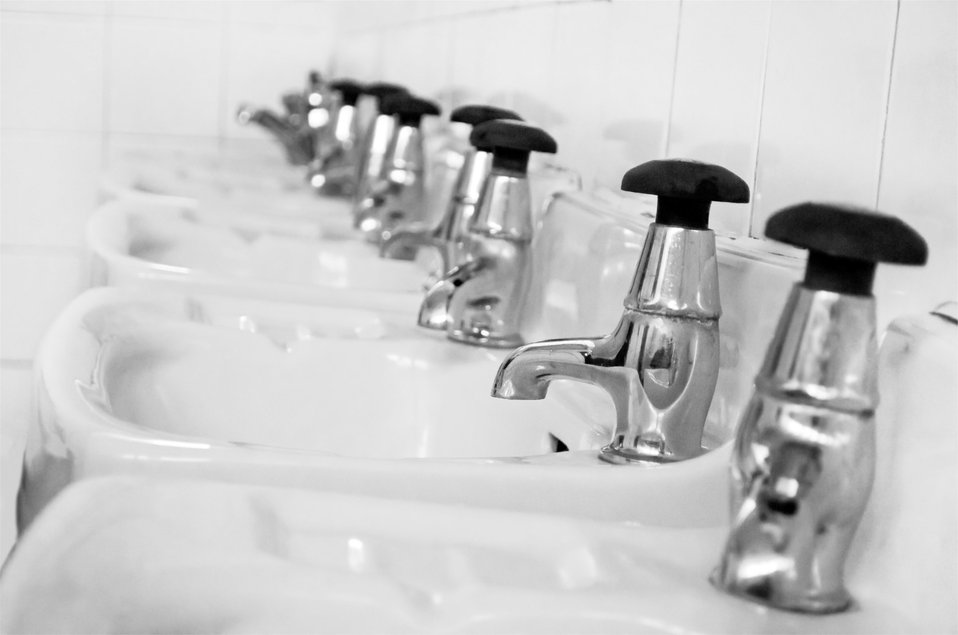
Basins - background.